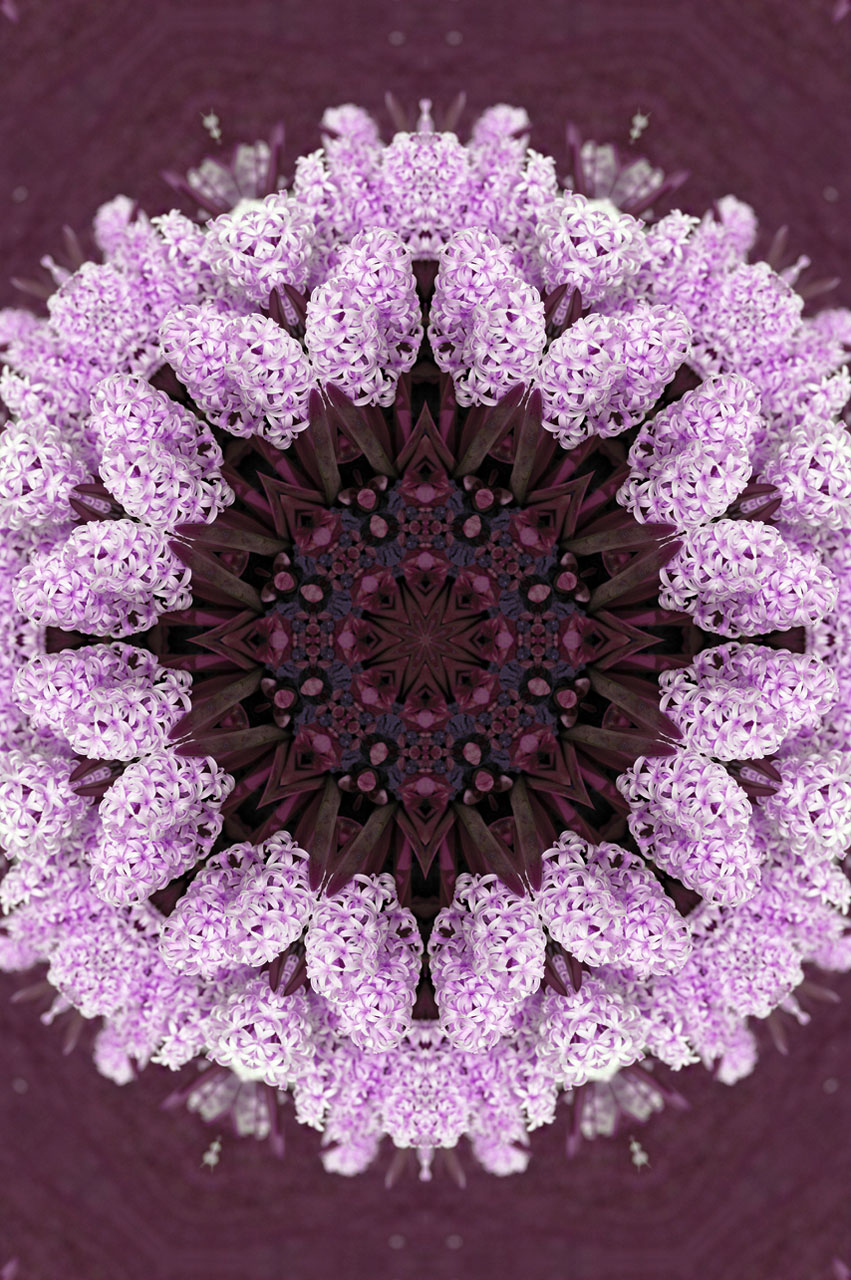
Unreal hyacinths

Unreal purple hyacinth frame or background.